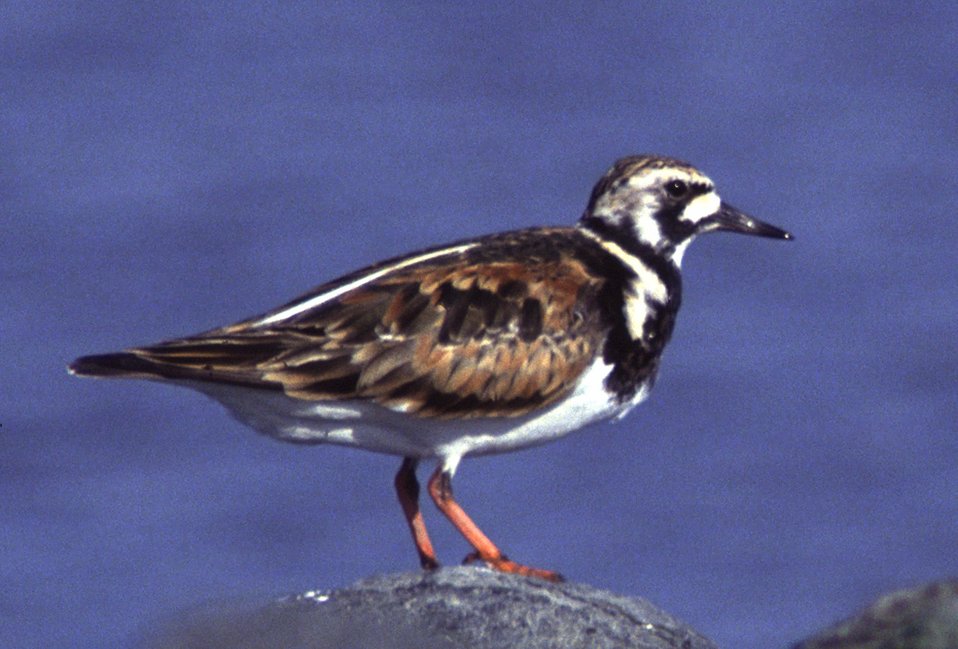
Ruddy Turnstone

Pt. Mahon, DE.